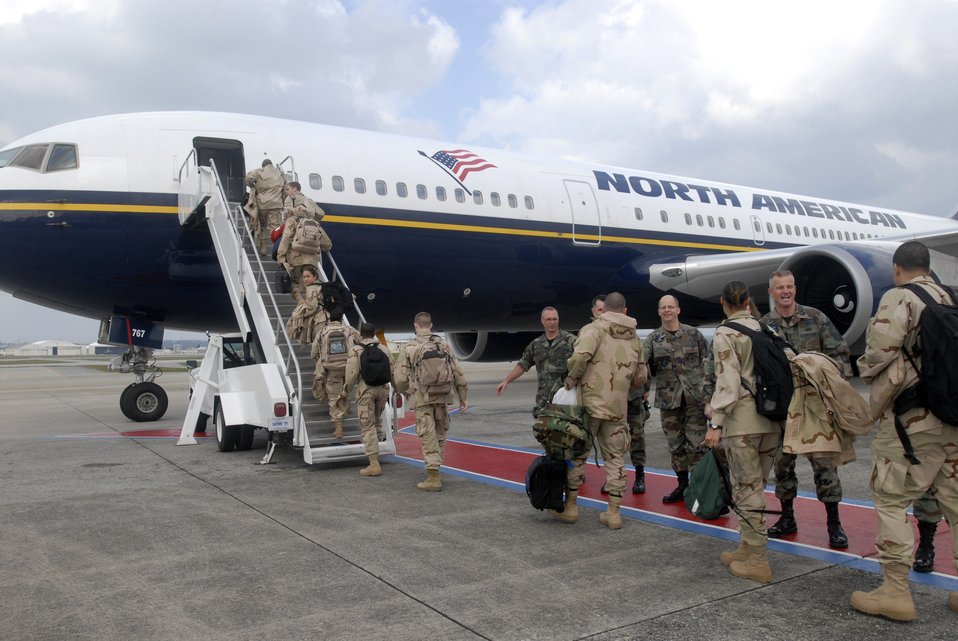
Deployed

Airmen from Kadena Air Base, Japan, embark Jan. 8 on a commercial aircraft for transport to support the war on terrorism. More than 600 Kadena members are deploying to various locations in the U.S. Central Command's area of responsibility.